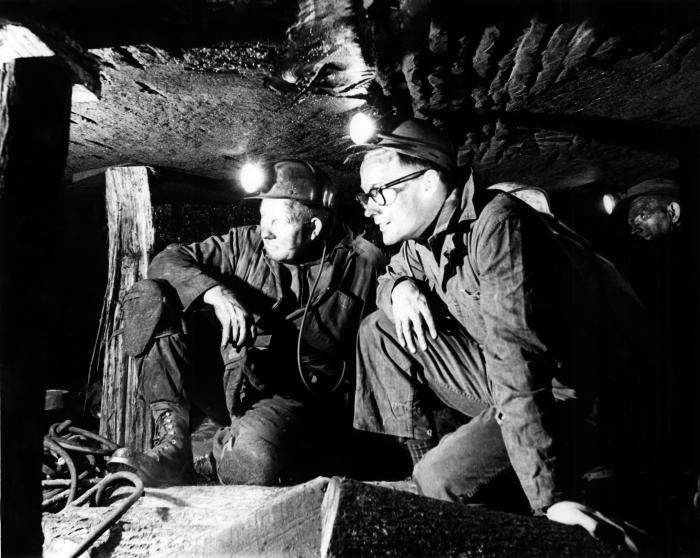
This historic image provided by the Center for Disease Control's (CDC), National Institute for Occupational Safety and Health (NIOSH), depicted two men inside a coal mine, crouched down low beneath the ceiling support beams. The man wearing the eyeglasses was thought to be an industrial hygienist, who happened to be on-site, in order to conduct some air quality readings. Neither man was wearing what would now be considered as an appropriate filtered breathing device. Mining coal, especially under circumstances such as these close quarters, facilitated coal dust inhalation, thereby, predisposing miners to the long-term negative health effects of this profession such as 'black lung disease', or 'coal-workers' pneumoconiosis' (CWP). Today, the Federal government's stringent regulations on the level of coal dust permissible in the air of a coal mine, and the requisite use of filtered breathing devices, has dramatically lowered the number of cases of black lung disease.